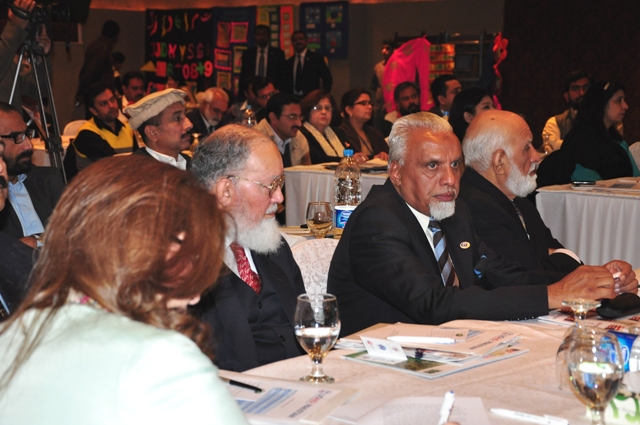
Workshop Participants